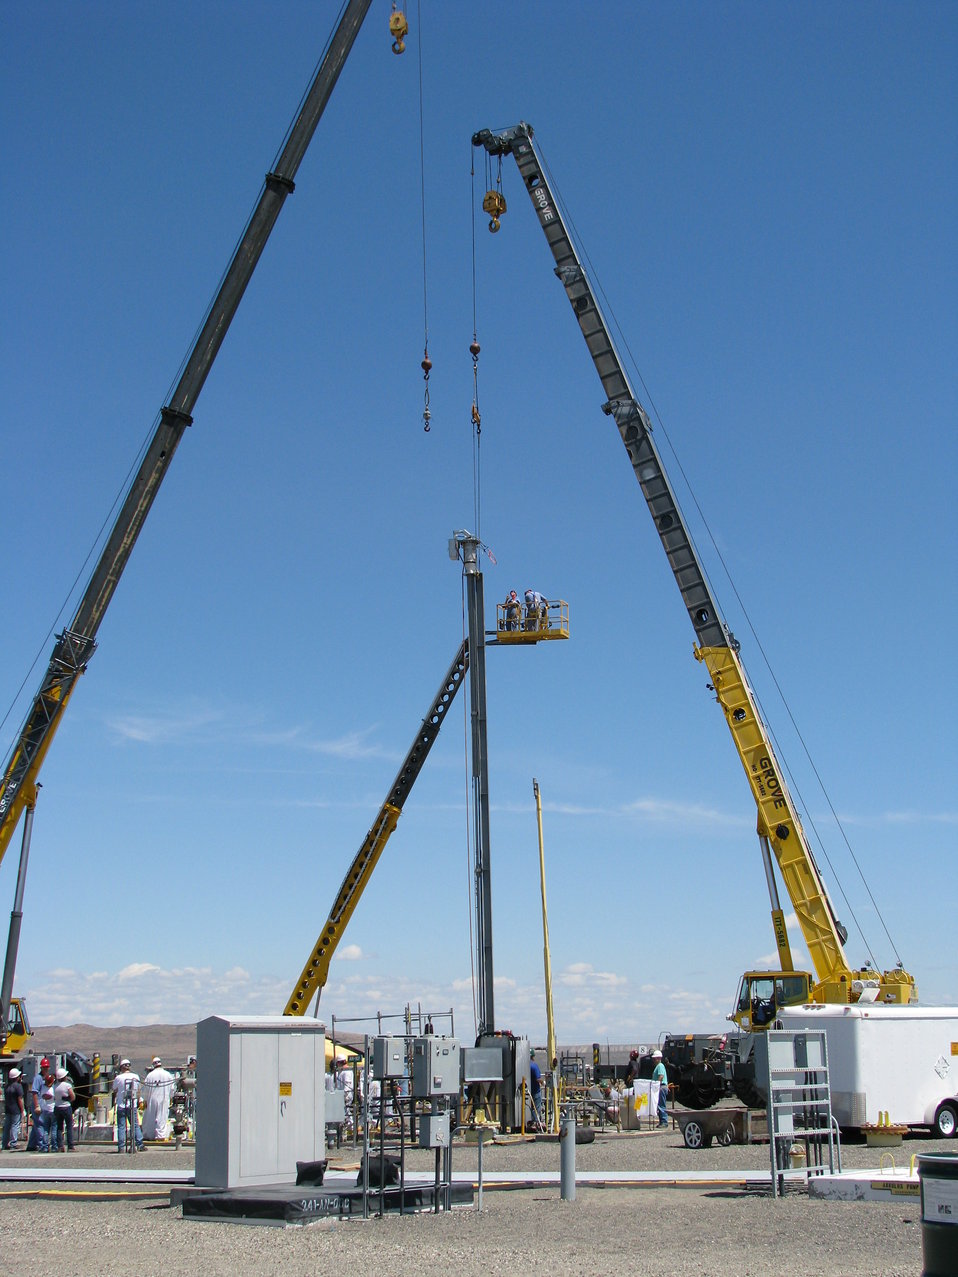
Corrosion Probe -Hanford ORP

Workers have successfully installed a corrosion probe into another one of Hanford’s double-shell tanks, an upgrade that is important to monitoring waste chemistry and potentially reducing the cost of treating tank waste. The new probe was built, assembled and installed with funds provided by the Recovery Act.